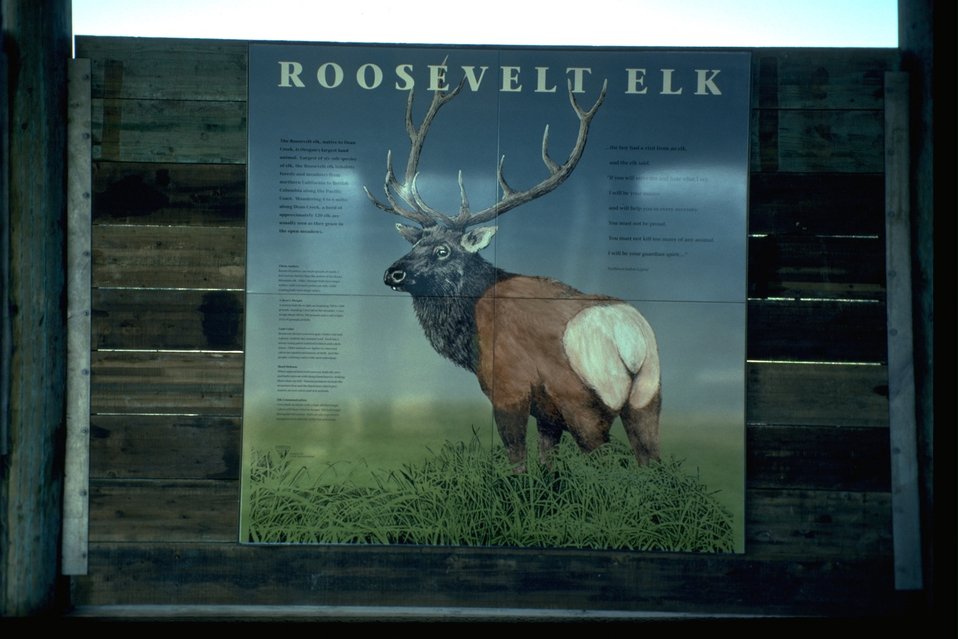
Interpretive Panel at Dean Creek: Roosevelt Elk.